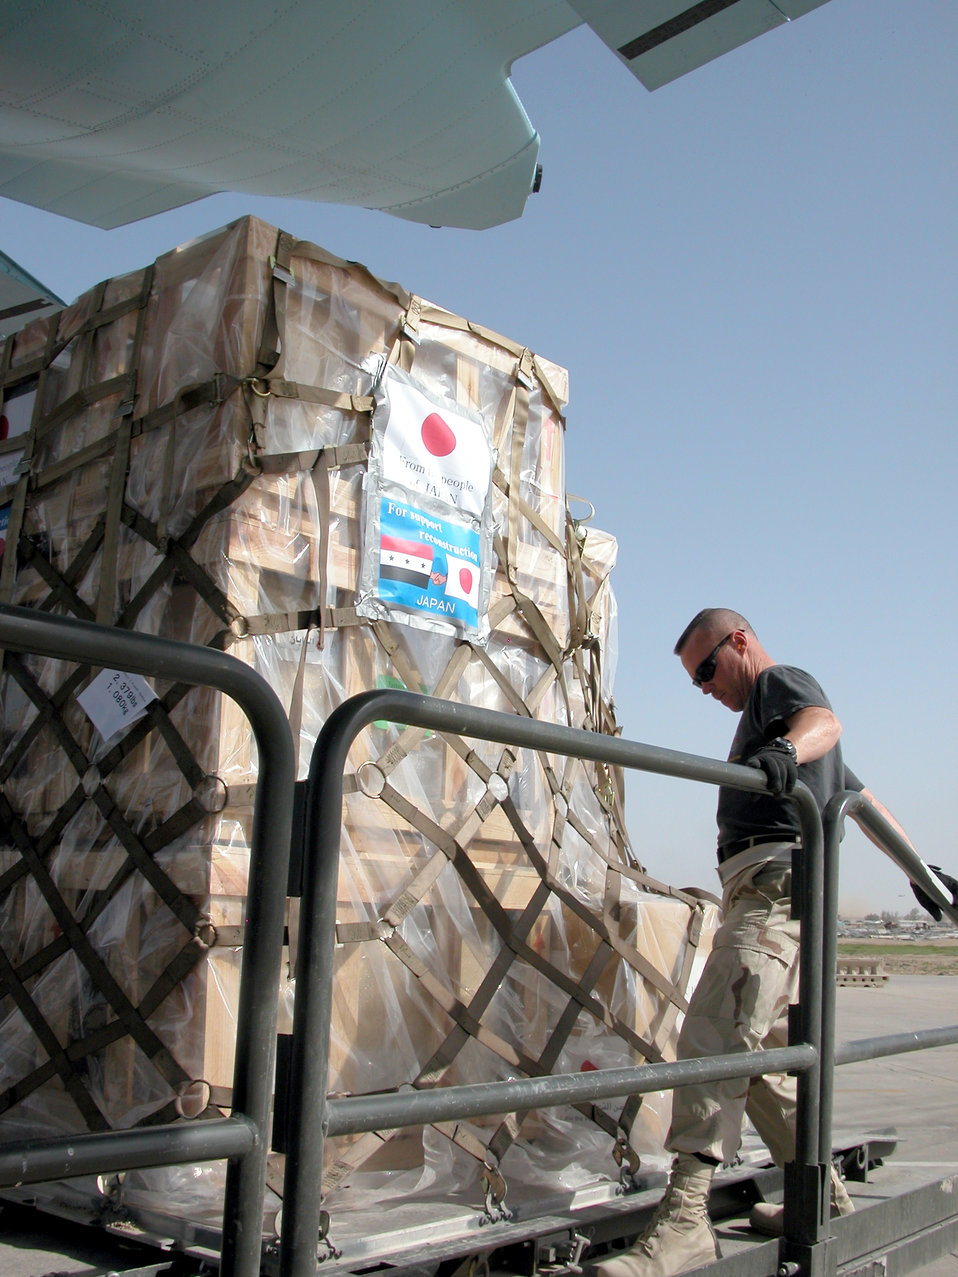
JASDF flies humanitarian mission

TALLIL AIR BASE, Iraq -- Senior Master Sgt. Thomas Halpin kicks a pallet lock into place to secure humanitarian supplies being unloaded from a Japanese C-130. Airmen from the United States and Japan unloaded more than 5,000 pounds of humanitarian supplies here March 3. Sergeant Halpin is the base's aerial port flight superintendent.